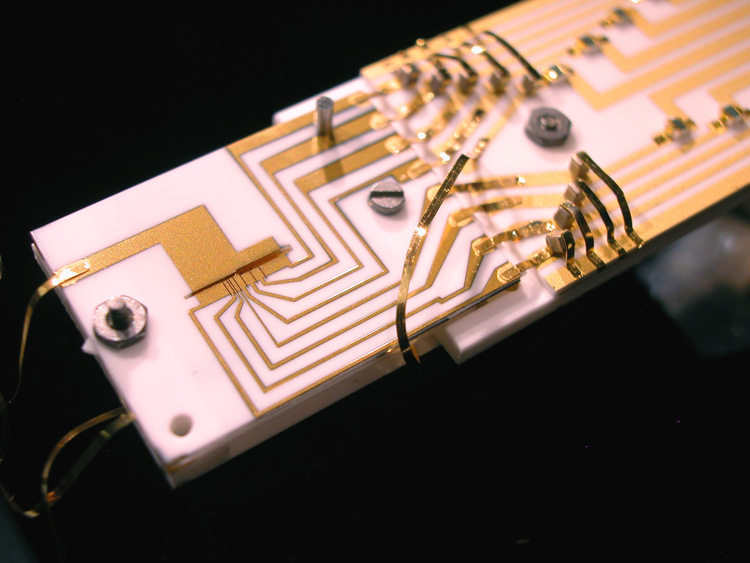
NIST Demonstrates Sustained Quantum Processing in Step Toward Building Quantum Computers

NIST physicists demonstrated sustained, reliable quantum information processing in the ion trap at the left center of this photograph, improving prospects for building a practical quantum computer. The ions are trapped inside the dark slit (3.5 millimeters long and 200 micrometers wide) between the gold-covered alumina wafers. By changing the voltages applied to each of the gold electrodes, scientists can move the ions between the six zones of the trap.